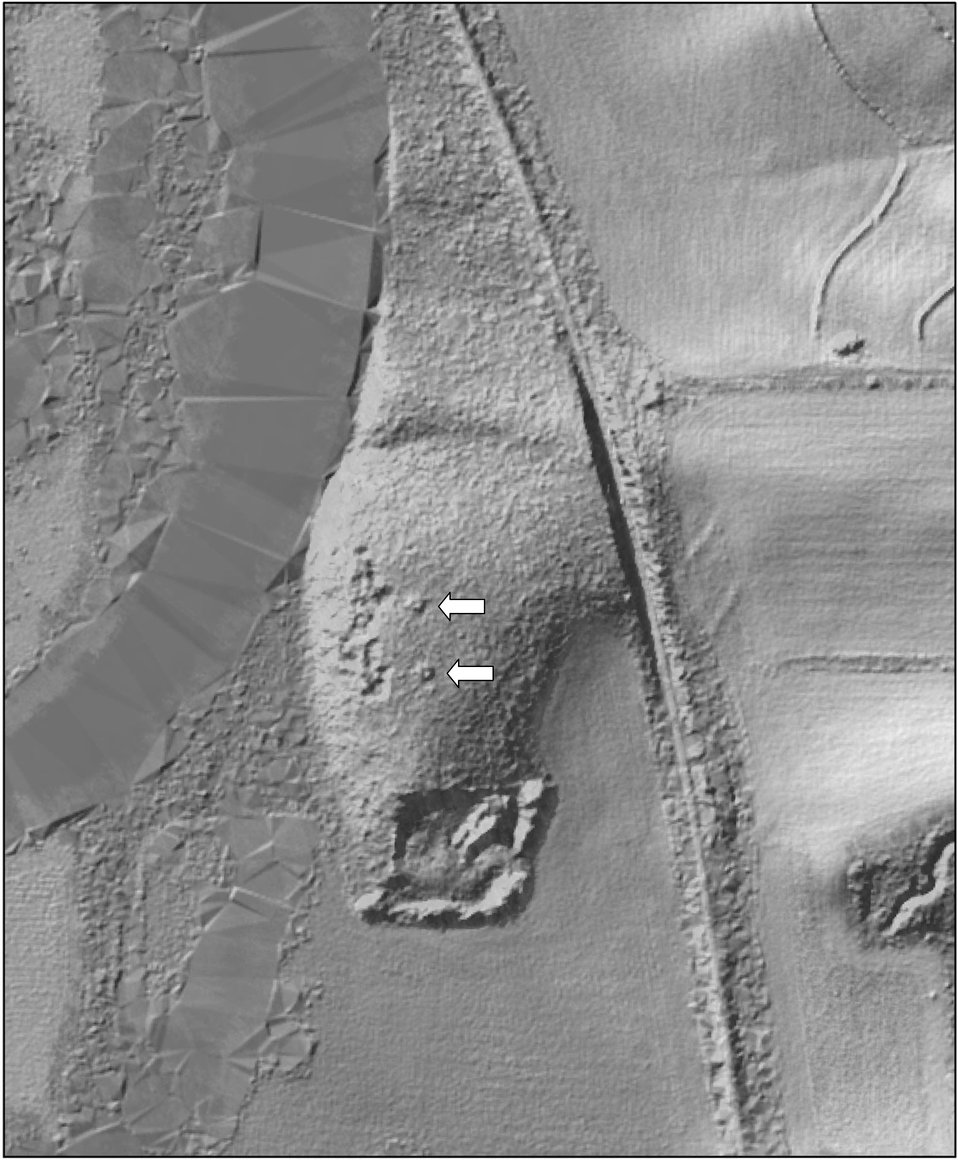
DuckMisery-LiDAR

Light Detection and Ranging (LiDAR) image shows the archaeological mounds in this restored wetland in Illinois.